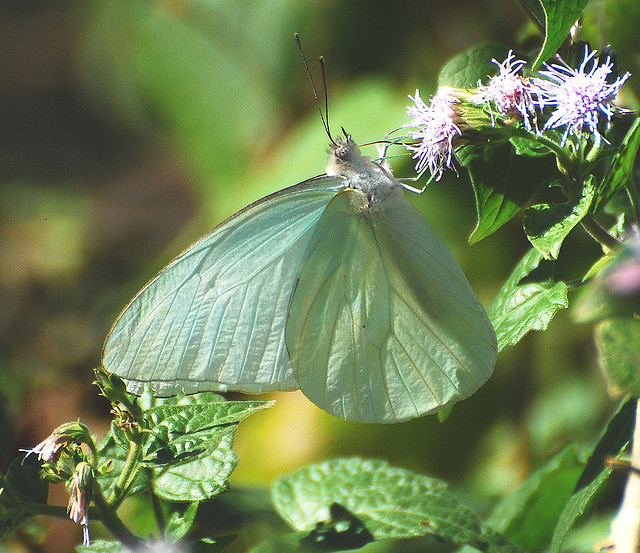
Florida white butterfly

Laguna Atascosa National Wildlife Refuge, TX